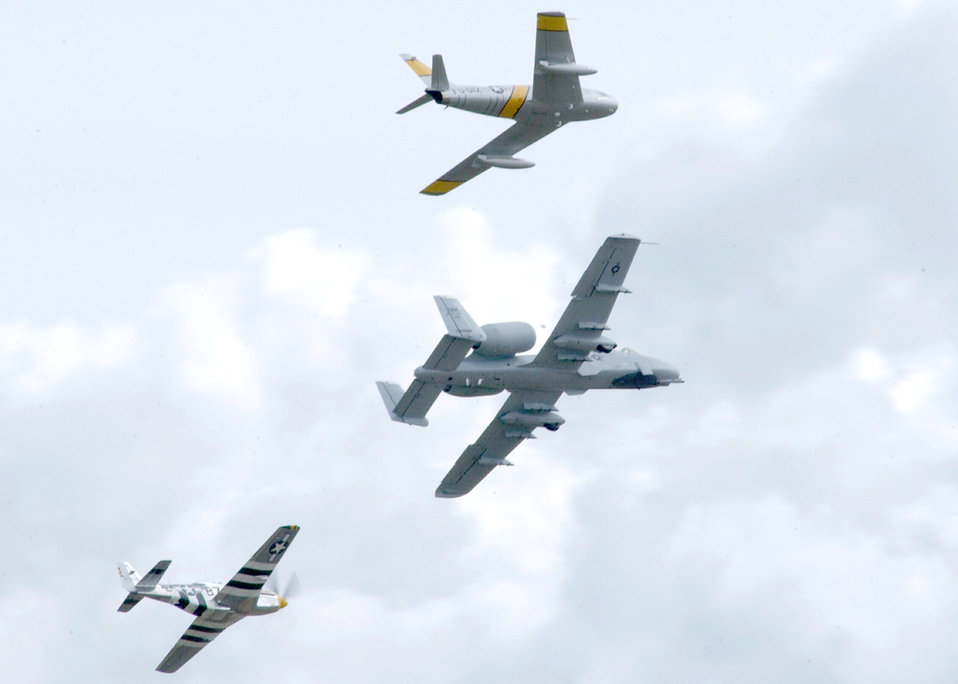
Formation flying

OVER DAVIS-MONTHAN AIR FORCE BASE, Ariz. -- (From top) an F-86 Sabre, an A-10 Thunderbolt II and a P-51 Mustang pass by during the 2005 Heritage Flight Conference here. The Heritage Flight program was established in 1997 supporting the Air Force's 50th anniversary. It involves today's state-of-the-art fighters flying in close formation with World War II and Korean War vintage fighters. The flight is designed to safely display the evolution of U.S. Air Force airpower and support Air Force's recruiting and retention efforts.